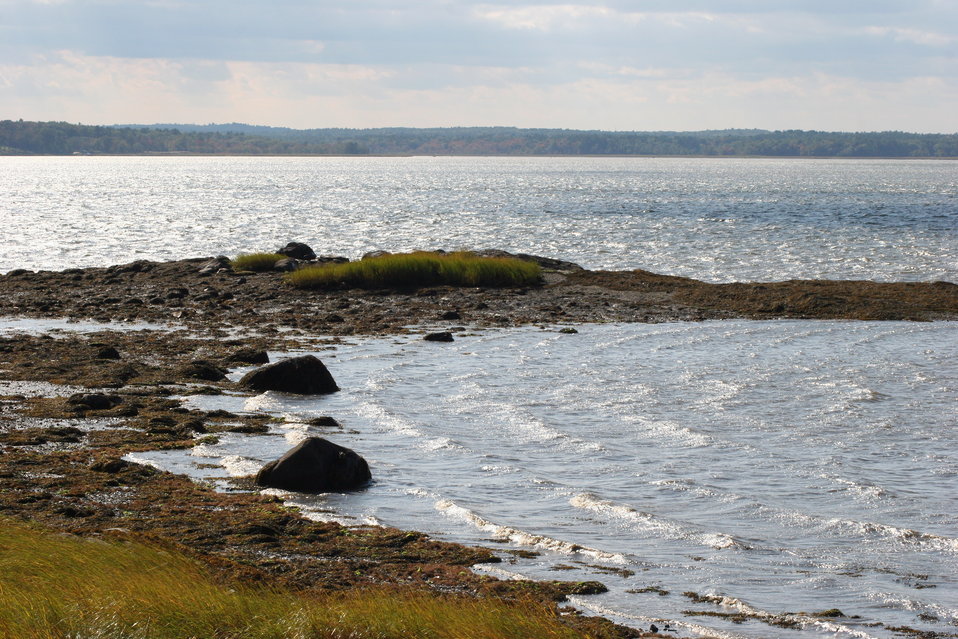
Great Bay NWR

Great Bay National Wildlife Refuge, Newington, NH.